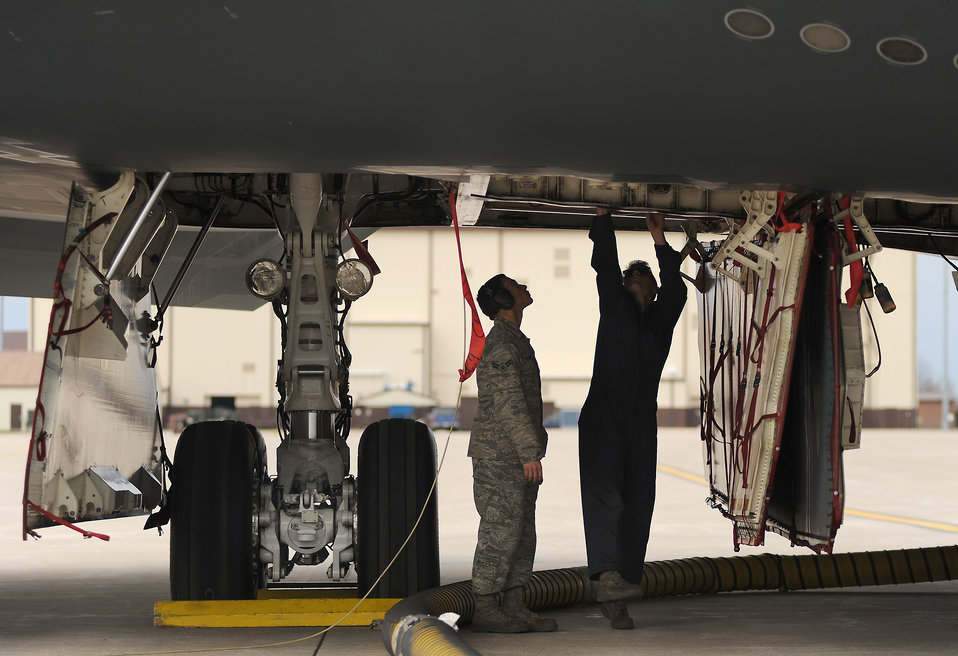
Operation Odyssey Dawn

WHITEMAN AIR FORCE BASE Mo. 509th Aircraft Maintenance Squadron, maintainers and crew chiefs, prepare B-2 Stealth Bombers for Operation Odyssey Dawn March 19, 2011.